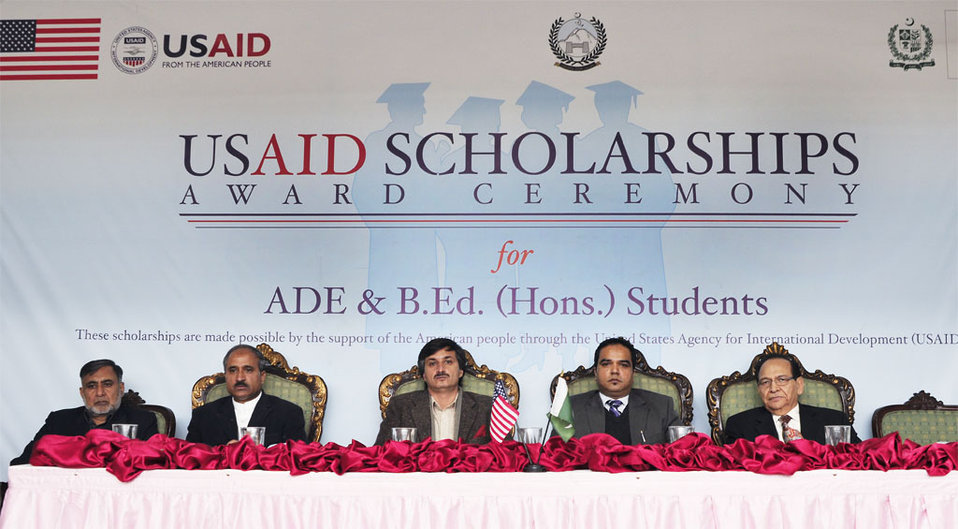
001: Peshawar, 27 Dec., 2011: USAID awarded scholarships to 44 Teacher Students from KP through its Pre-Service Teacher Education Program (Pre-STEP).

L to R: Mr. Attaullah Khan, Director Curriculum; Mr. Mushtaq Jadoon, Secretary Elementary & Secondary Education; Mr. Sardar Hussain Babak, Provincial Minister for Elementary & Secondary Education, Government of Khyber Pakhtunkwa; Mr. Muhammad Tariq Khan, Senior Education Advisor, U.S. Agency for International Development (USAID); and Dr. Mahmoodul Hassan Butt, Chief of Party, USAID Pre-STEP.